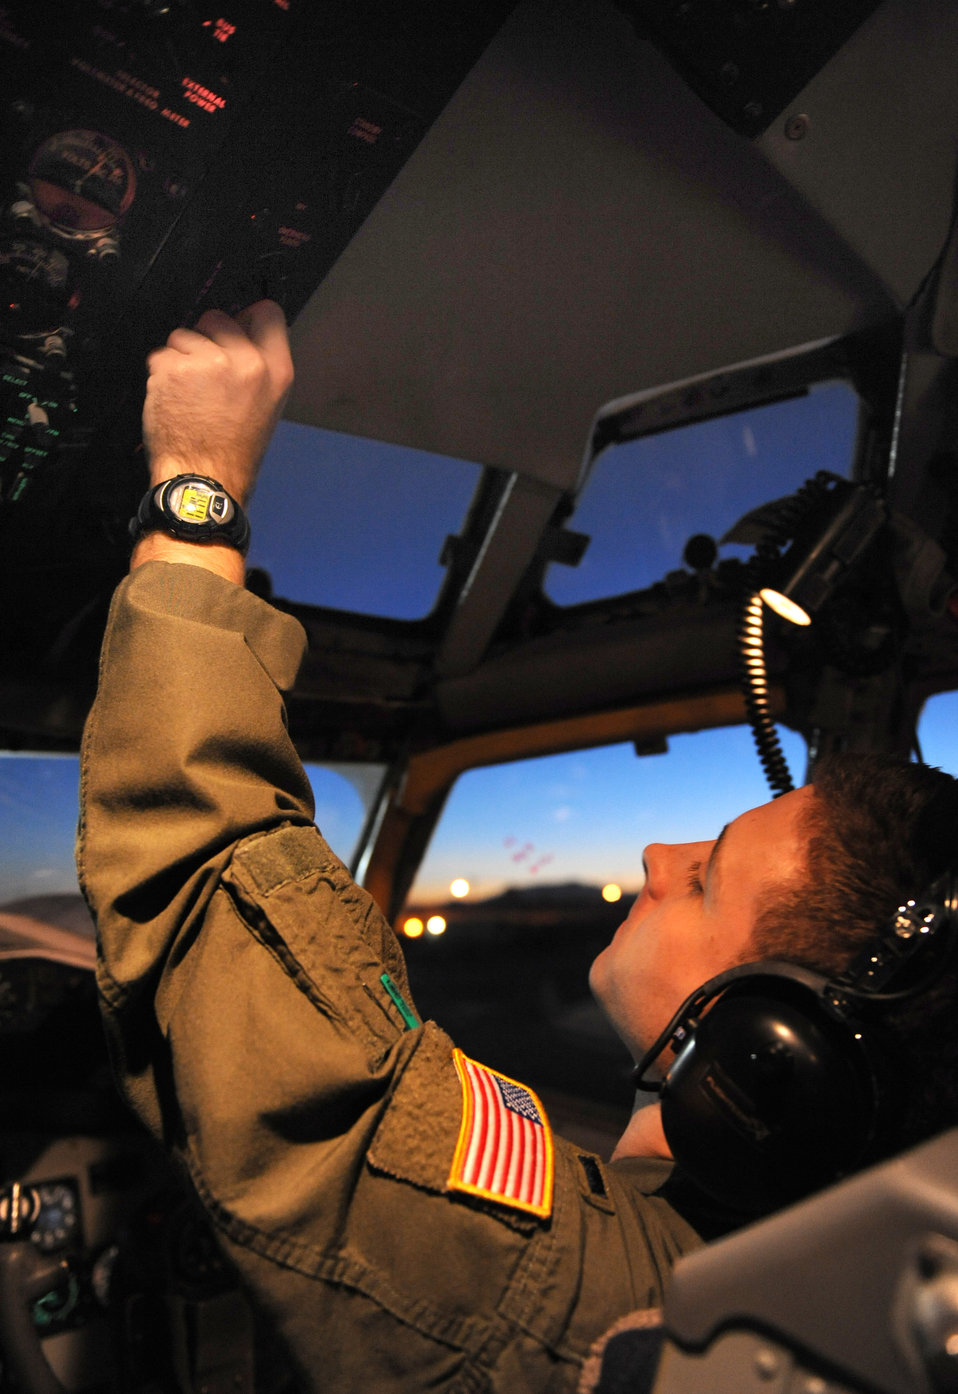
Night operations at Red Flag

1st Lt. Joshua Rope performs a pre-flight inspection Feb. 3 in the cockpit of a KC-135 Stratotanker during a Red Flag exercise at Nellis Air Force Base, Nev. Red Flag is a multi-national exercise providing a realistic environment to practice combat scenarios. The experience gained during the exercise is vital to the survival of air crews in combat. Lieutenant Rope is a pilot with the 905th Air Refueling Squadron at Grand Forks AFB, N.D.